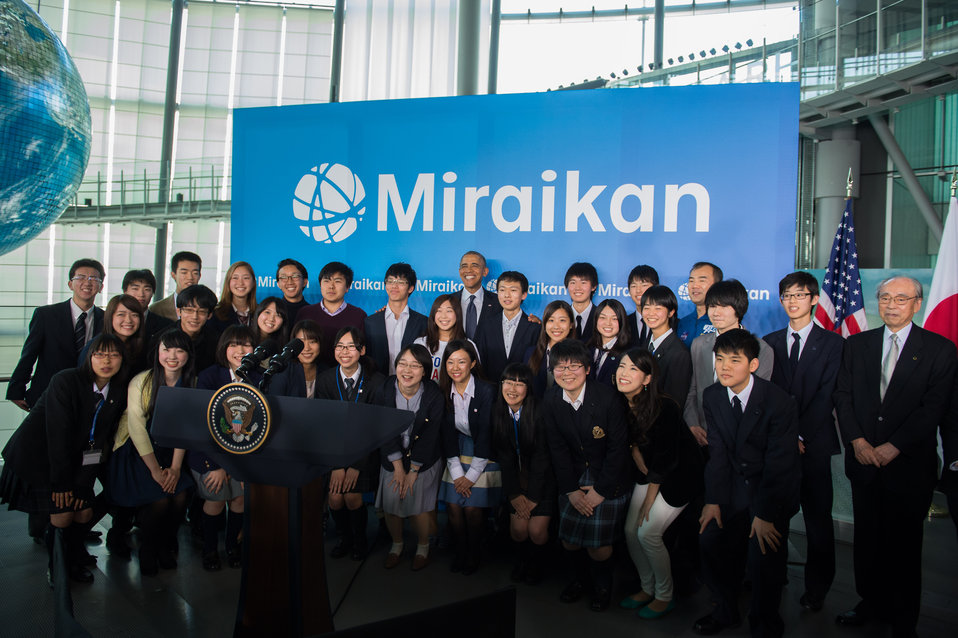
President Obama Poses for a Photo with Japanese Students

U.S. President Barack, with Japanese students, poses for a photo during his visit to the Miraikan (the National Museum of Emerging Science and Innovation) in Tokyo, Japan, on April 24, 2014.